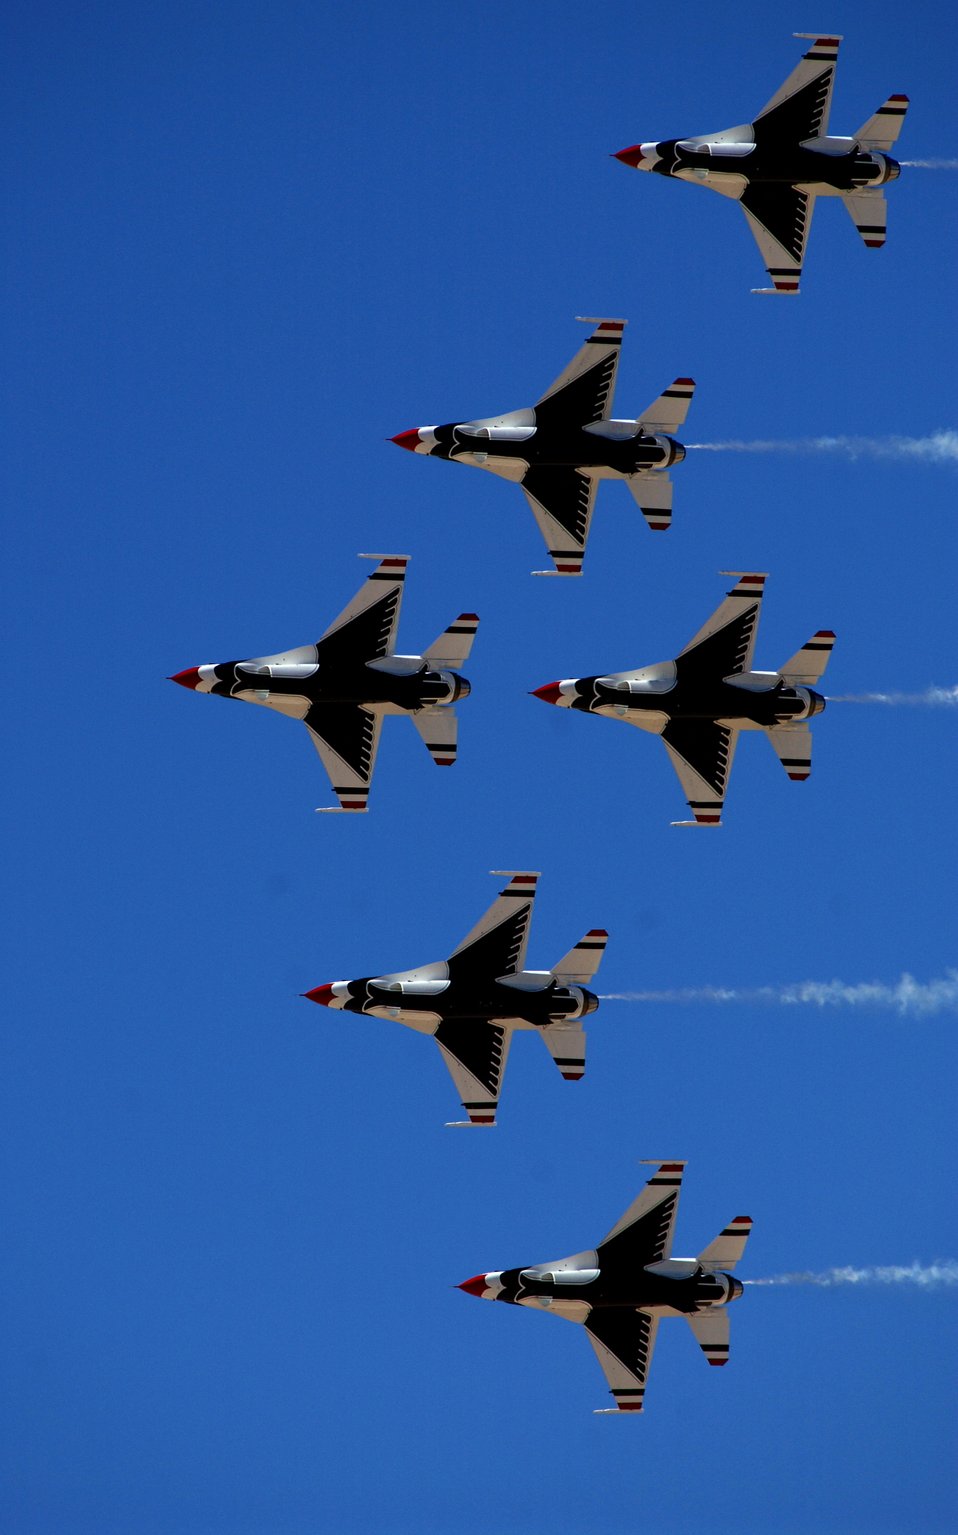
Delta Pass and Review

INDIAN SPRINGS AIR FORCE AUXILIARY STATION, Nev. -- The 2005 Thunderbirds practice a Delta pass here March 3. The Thunderbirds show season started March 11.